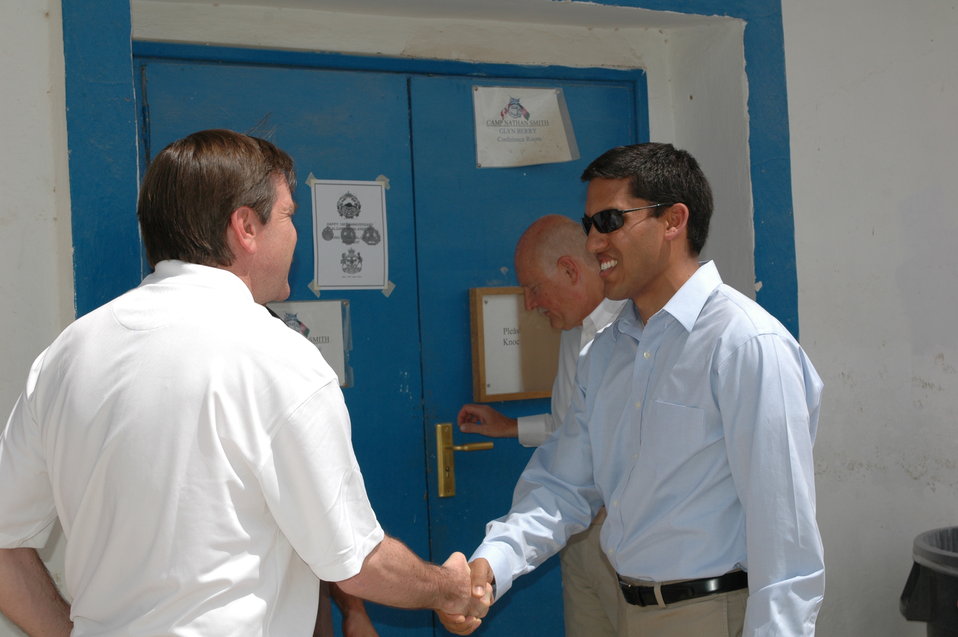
Dr Shah Visits Kandahar April 9, 2010